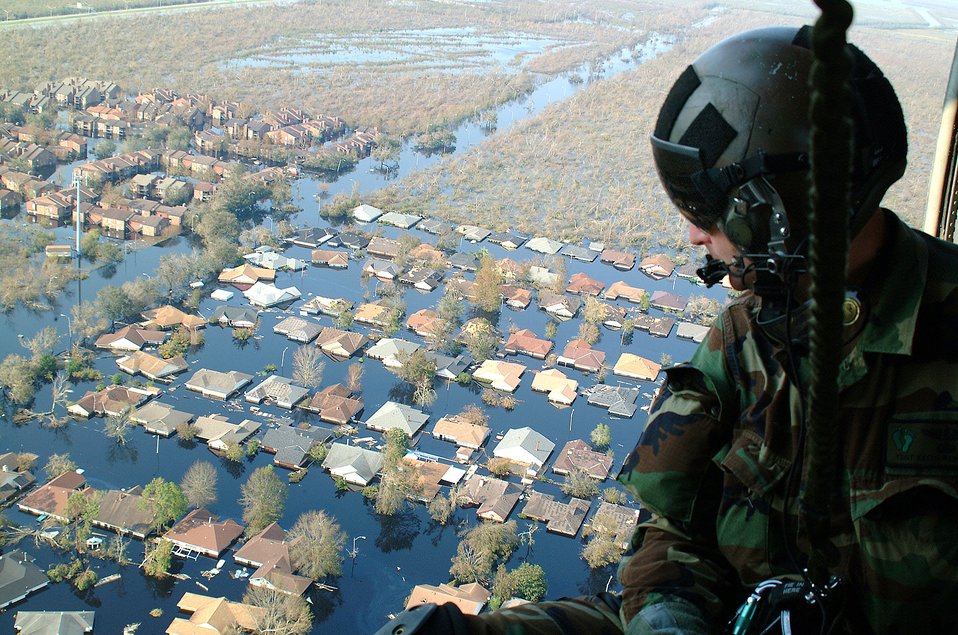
A PJ's night in New Orleans

OVER NEW ORLEANS -- Tech. Sgt. Keith Berry looks down into flooded streets searching for survivors. He is part of an Air Force Reserve team credited with saving more than 1,040 people in the aftermath of Hurricane Katrina. He is a pararescueman with the 304th Rescue Squadron from Portland, Ore.